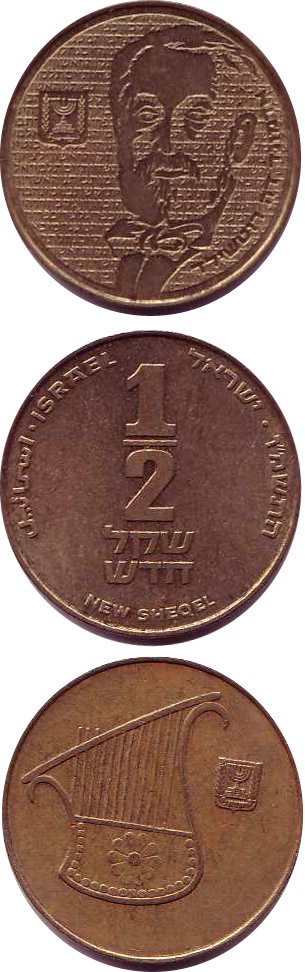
0.5 NIS coin. The top most coin has an imprint of Edmond de Rothsshild. The bottom two are of the same coin - התשמ'ו